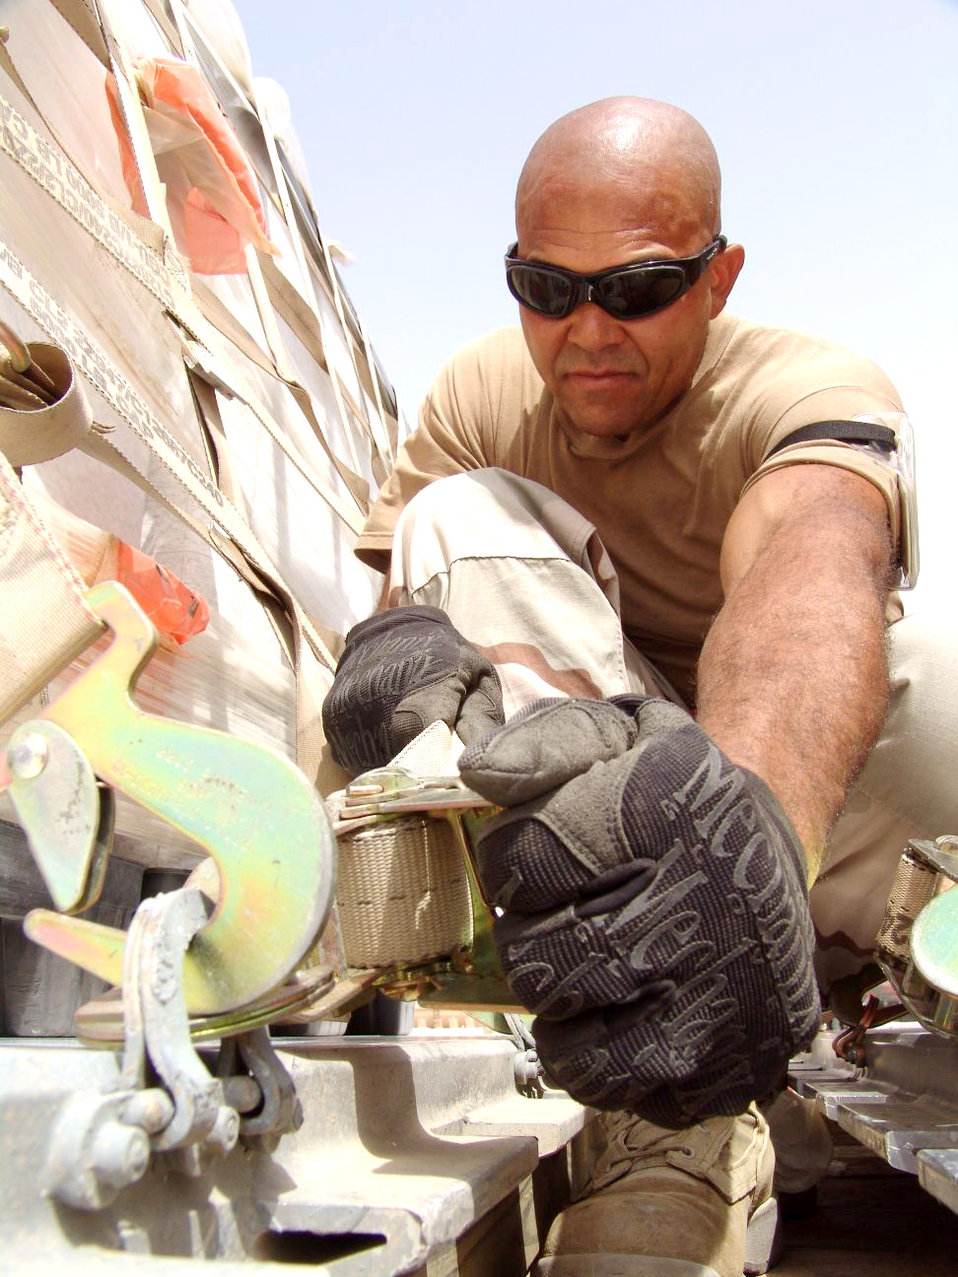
Airmen keep mission rolling

SOUTHWEST ASIA -- Tech. Sgt. Carlos de los Santos secures and tightens a cargo strap before loading it onto a C-17 Globemaster III at a forward-deployed location. He is the pallets and nets manager with the 386th Expeditionary Logistics Readiness Squadron and is deployed from the Pennsylvania Air National Guard's 111th Fighter Wing.